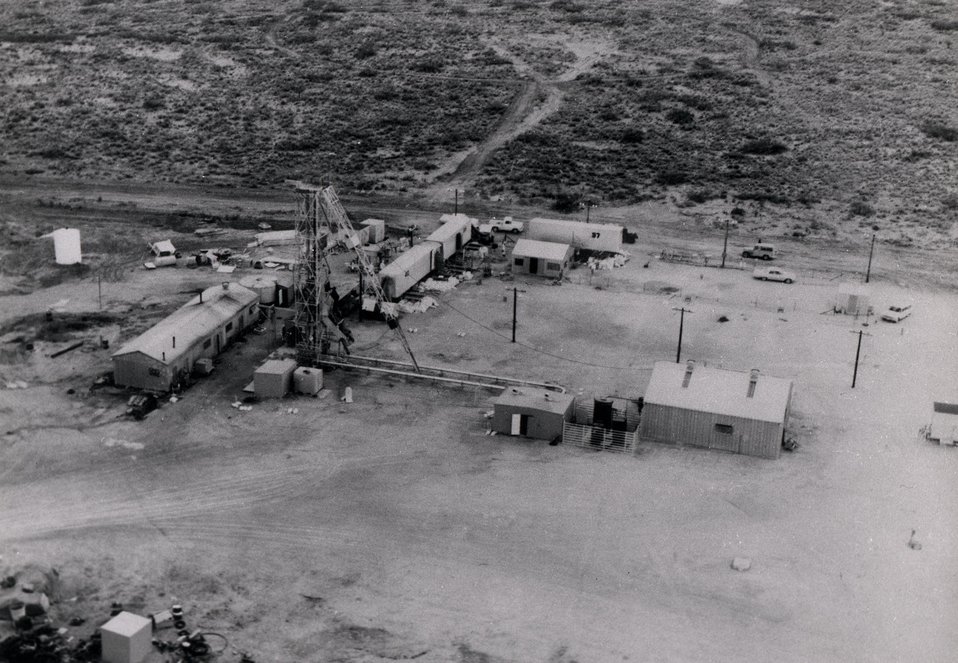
Project Gnome...December 11, 1961, Carlsbad, New Mexico...View of shaft area after the detonation on December 10,1961. Circa 1962.